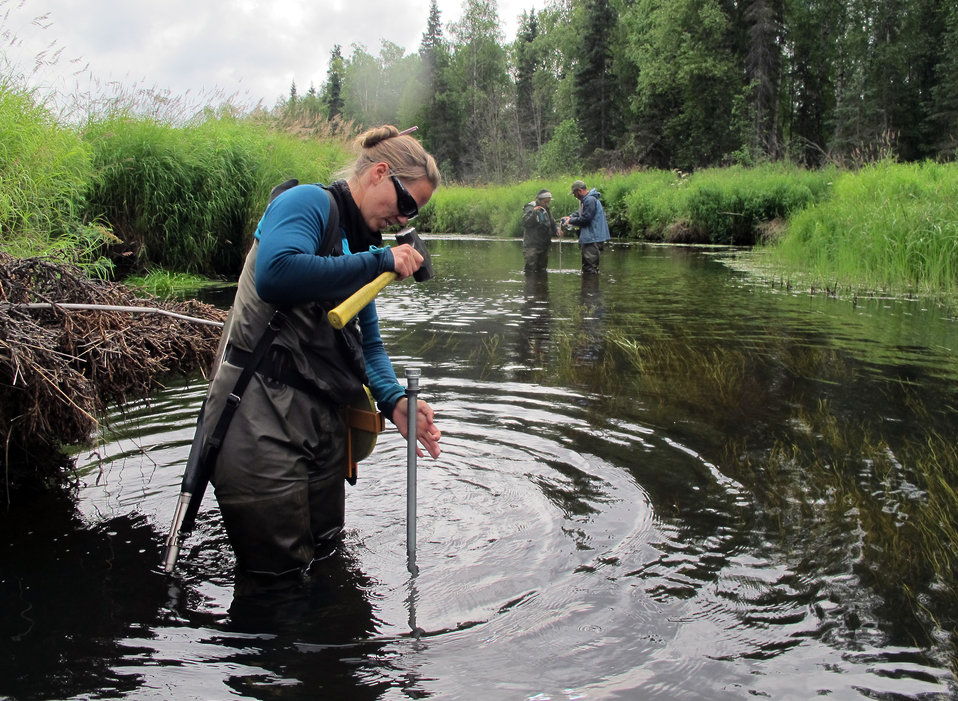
Piezometer Prep

Anchorage staff ready and take readings from piezometers to evaluate upwelling or downwelling in Rabideux Creek, a tributary to the Susitna River near Talkeetna, Alaska. This data will be combined with other habitat measurements and fish assessments to better understand what spawning conditions are preferred by salmon here. USFWS/Katrina Mueller